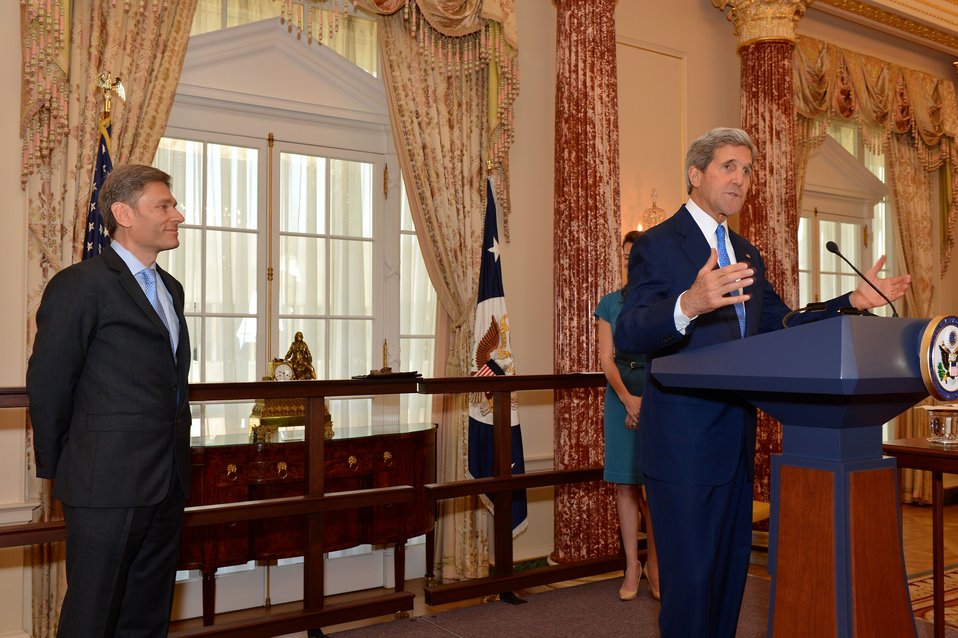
Secretary Kerry Delivers Remarks at Assistant Secretary Malinowski's Swearing-in Ceremony

U.S. Secretary of State John Kerry delivers remarks before swearing in Assistant Secretary for Democracy, Human Rights, and Labor Tom Malinowski, at the U.S. Department of State in Washington, D.C., on May 13, 2014.